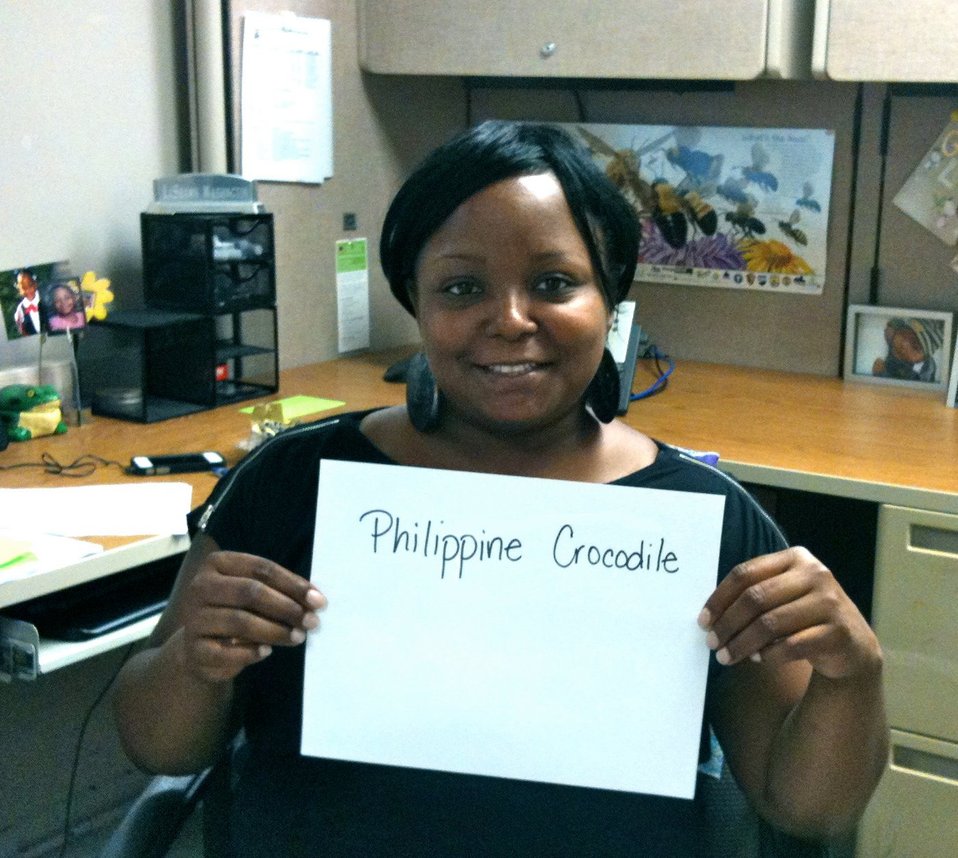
LaShawn Washington, 'Philippine Crocodile,'

International Affairs participates in FFI's In Our Hands campaign